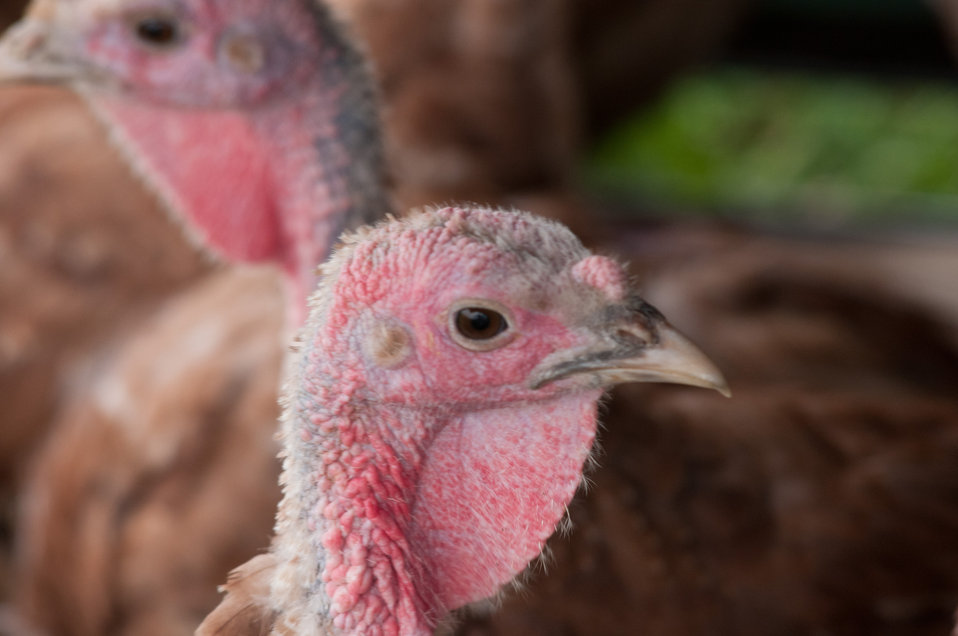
Broiler turkeys graze on organic pastures and live in pens that protect them from predators, direct sun light, and wind at Nick’s Organic Farm, owned by Nick Maravell in Adamstown, MD on Friday, July 12, 2013. The enclosures are light enough to be moved by hand, each day, one consecutive section at a time. This allows the pasture to easily recover from the grazing. The farm produces Black Angus beef, chicken, turkey, eggs, hay, soybeans, corn, alfalfa, orchard grass, rye; and other crops. The cattle are100% grass-fed receiving certified organic pasture, certified organic hay (in winter), water and mineral salts mixed with sea kelp. The cattle are not fed hormones, antibiotics or animal products. Poultry feed from grain is ground from organic grain. The poultry also graze on organic pastures. The farm has conducted on-farm research with federal, state and non-profit agencies to refine organic practices. An organization such as the U.S. Department of Agriculture (USDA) Agricultural Research Service (ARS) center in Beltsville has been able to conduct research to improve organic crops and to breed and manage the cattle so that they have.